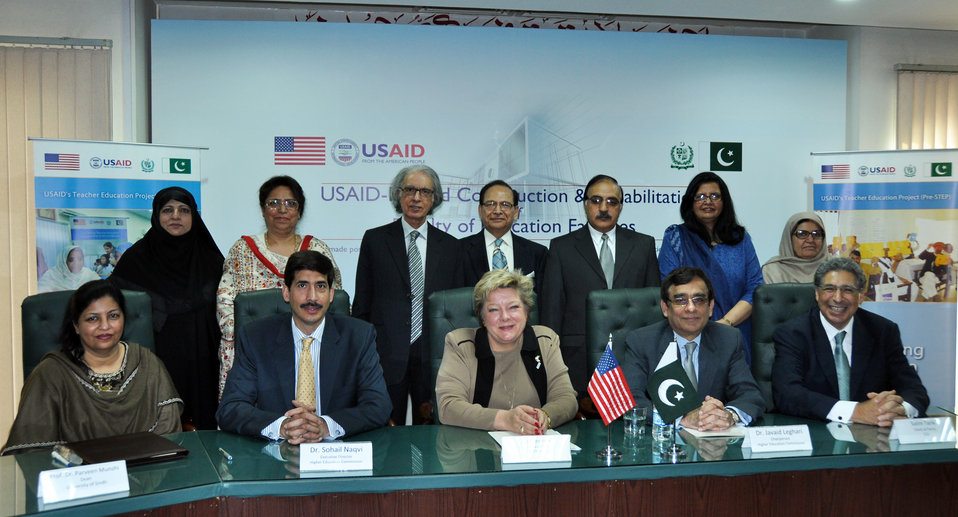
Higher Education Commission (HEC)

Islamabad, February 1, 2012 – USAID Deputy Mission Director Karen Freeman (in the center) with Higher Education Commission (HEC) Chairman, Dr. Javaid Leghari as well as representatives from seven Pakistani universities, HEC, and USAID projects at the MOU signing ceremony to construct facilities for university faculties of education with $15 million funding from the U.S. Government.